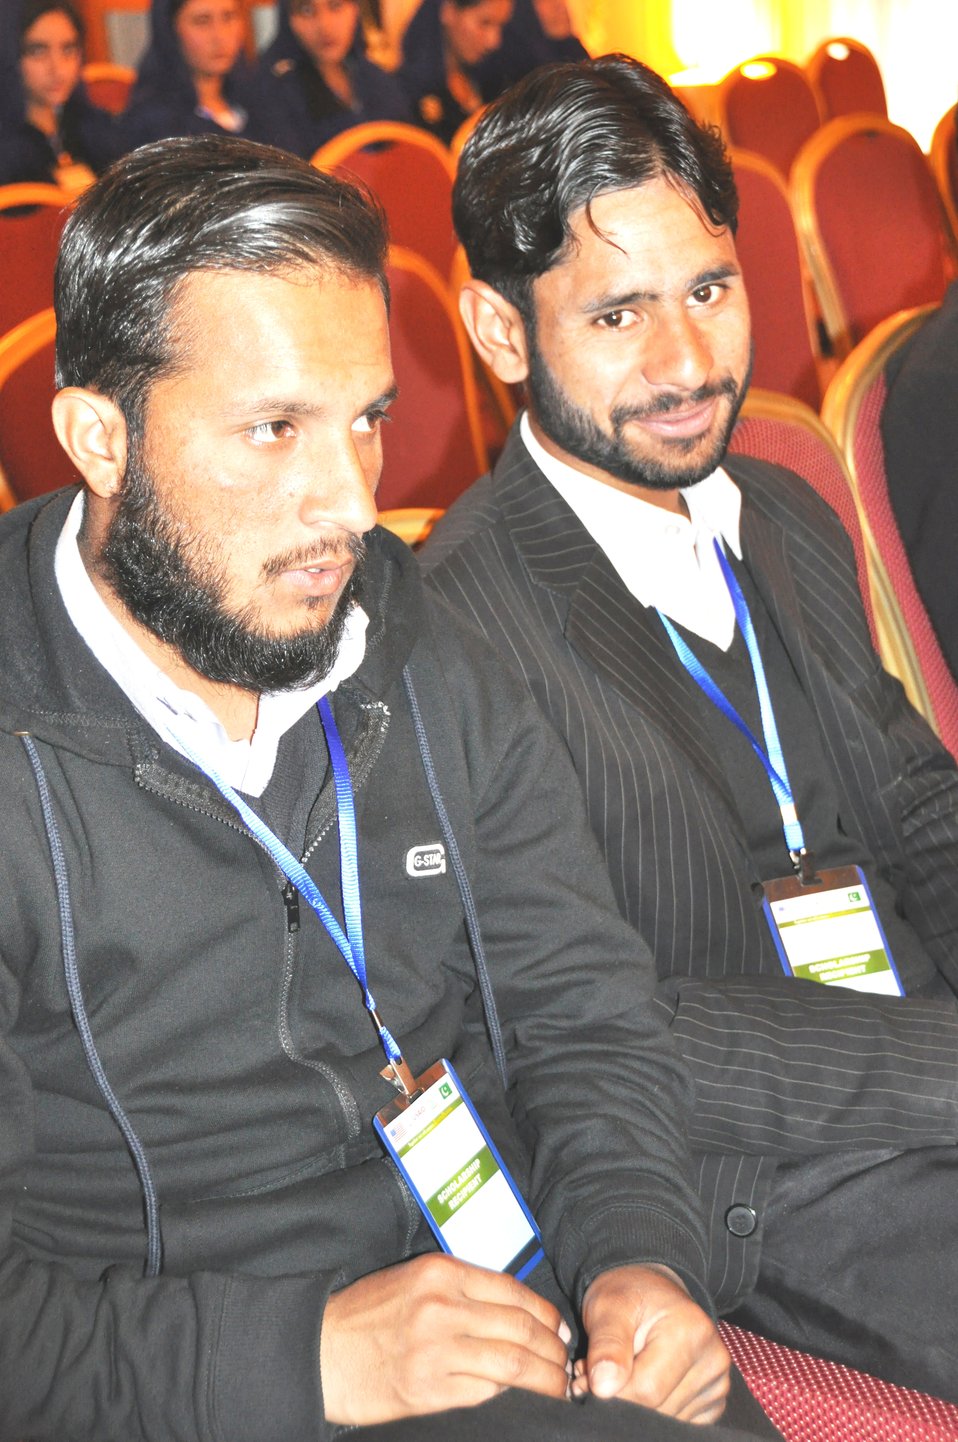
Scholarship recipients